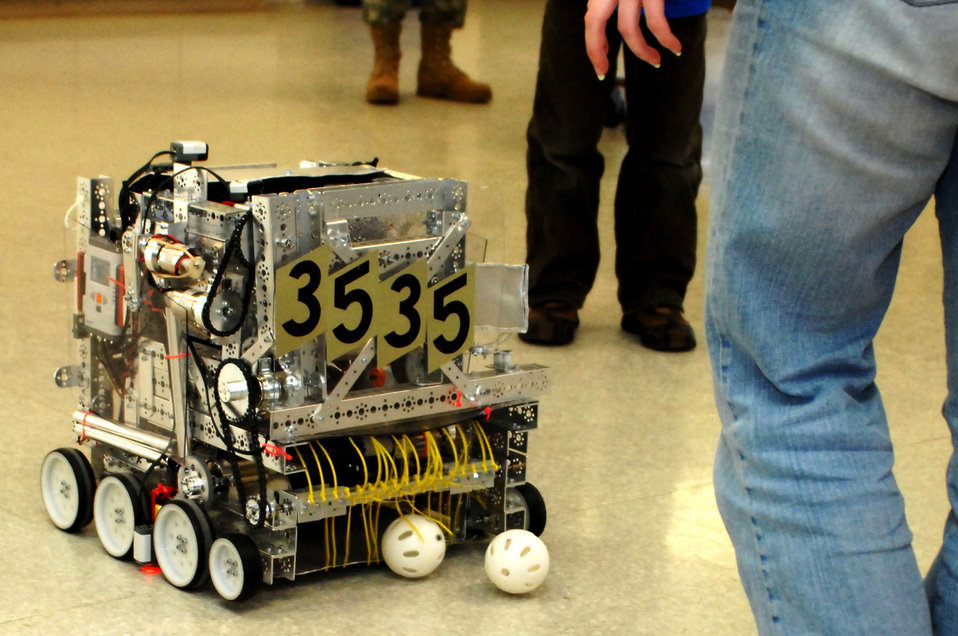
Scott youth participate in international robot competition

Zippy the robot scoops up plastic balls during a demonstration March 3, 2010, at Scott Air Force Base, Ill. The robot was created by the Robotic Maniacs, a six-person team consisting of homeschooled high school students, four of whom are military dependents from Scott AFB.